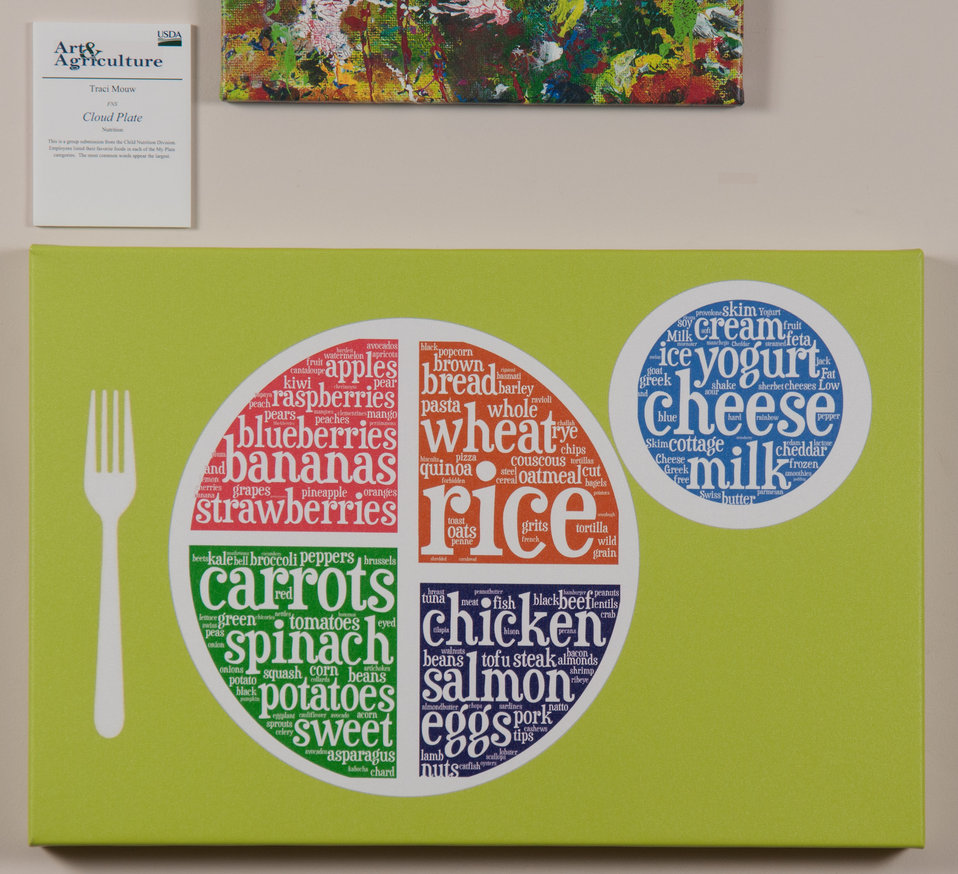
Online Viewer's Choice entries of the 2013 Art & Agriculture, Tuesday, July 9, 2013, in the South Building, Washington, D.C. Themes were expressed by employees from across the department and the contest was open to full-time and part-time USDA employees. Winning artwork will be displayed till the end of the year. U.S. Artistic expression is a creative outlet that is vital for an individual to grow and develop.